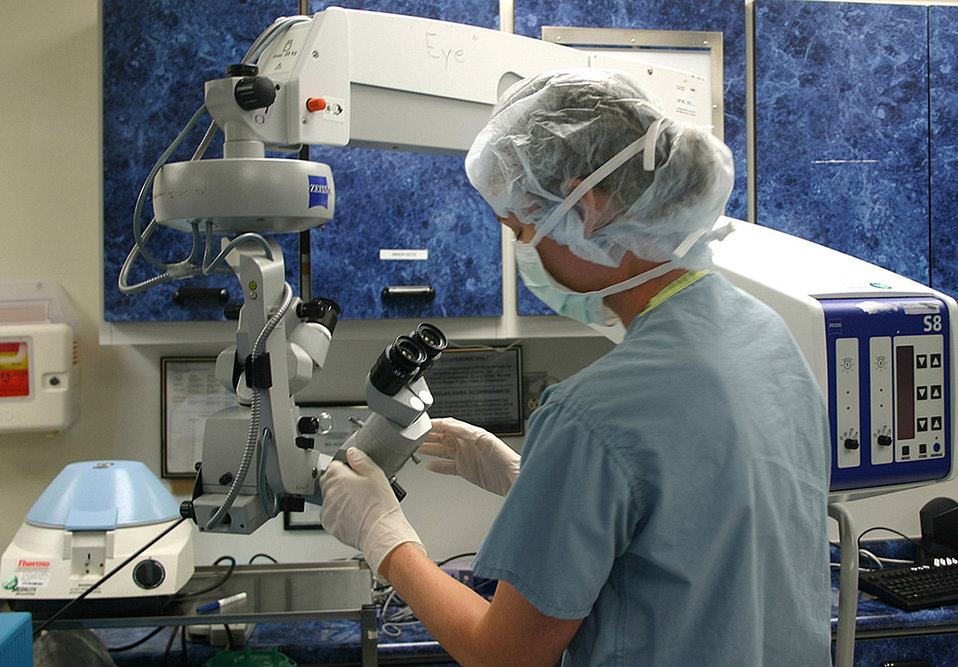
Preparing for surgery

Second-year Ophthalmology resident Capt. (Dr.) Kristine Pierce, 59th Training Support Squadron, prepares to remove of a foreign object from a patient's eye.